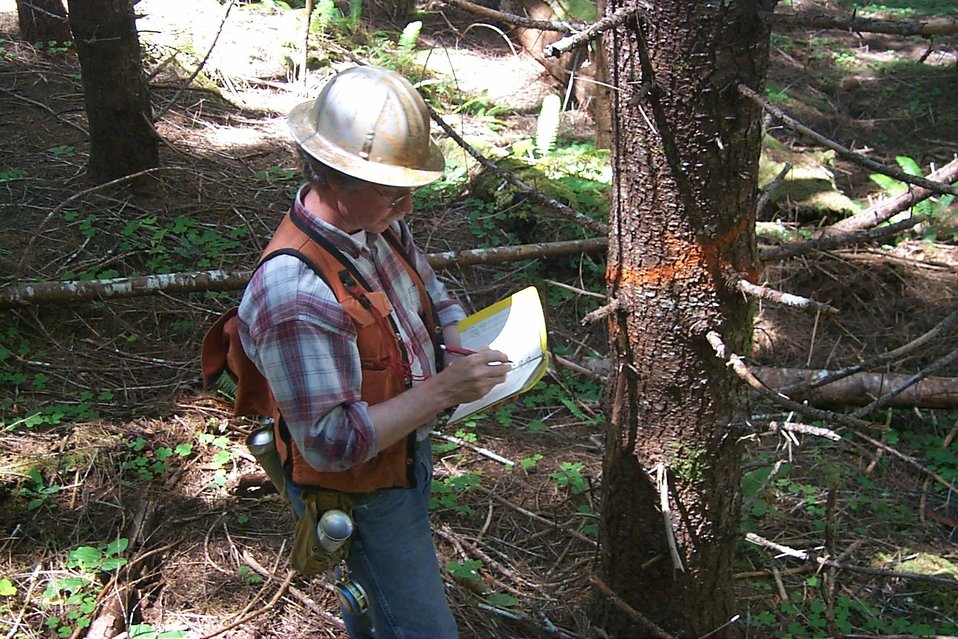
Kevin Dow marking trees in the Camas East Timber Sale.